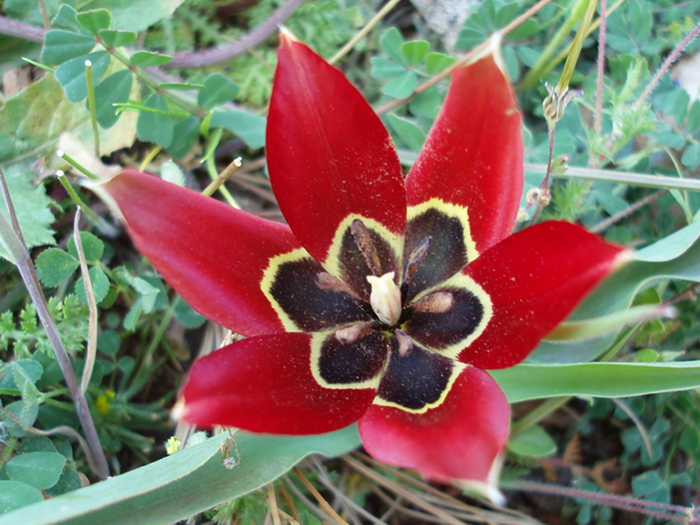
A tulip in Mersin. Türkçe: Mersin'deki bir lale.